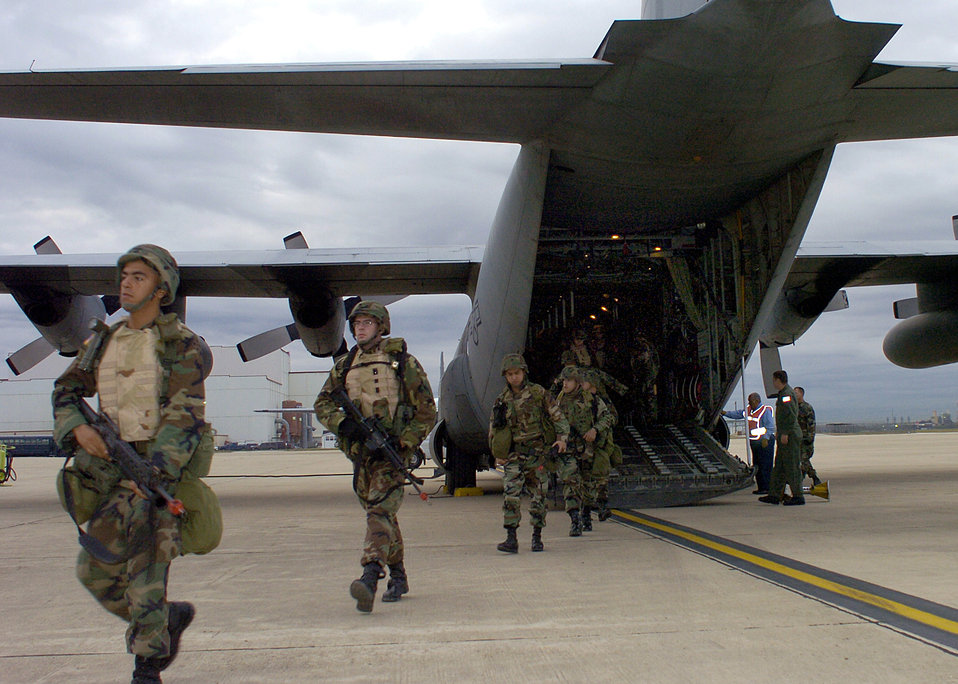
Soldiers deploy to Lackland for quick-reaction exercise

LACKLAND AIR FORCE BASE, Texas -- Soldiers from the 4th Infantry Division out of Fort Hood, Texas, file off of a C-130 Hercules for a Quick Reaction Force exercise here Dec. 8. The mission was to provide a flexible and responsive unit to a specific region in the event of a domestic threat or incident. The exercise here trained the Soldiers to prepare for homeland defense missions.